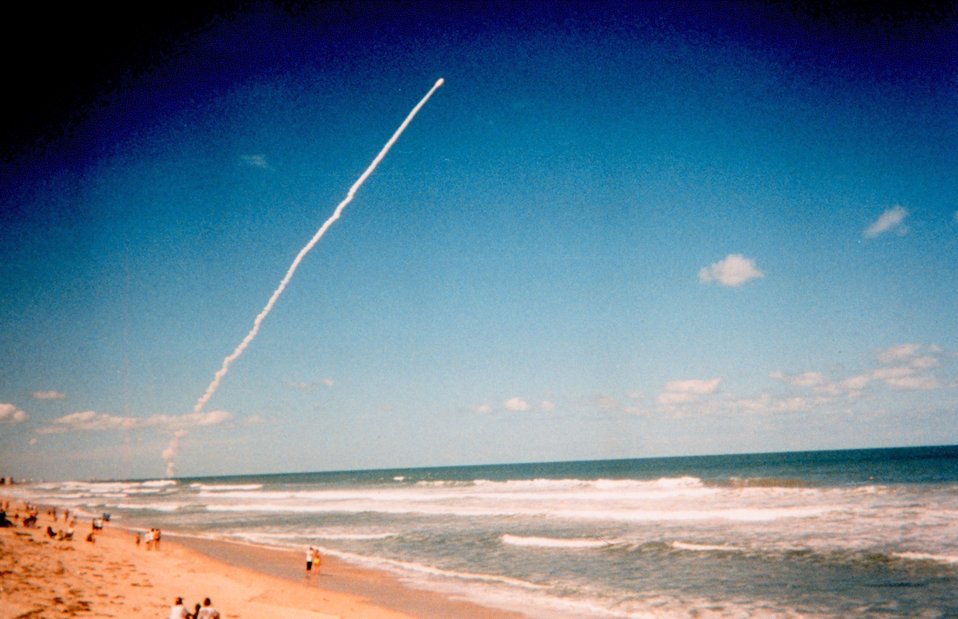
A space shuttle launch from Cape Canaveral provides a dramatic site for beach-goers.